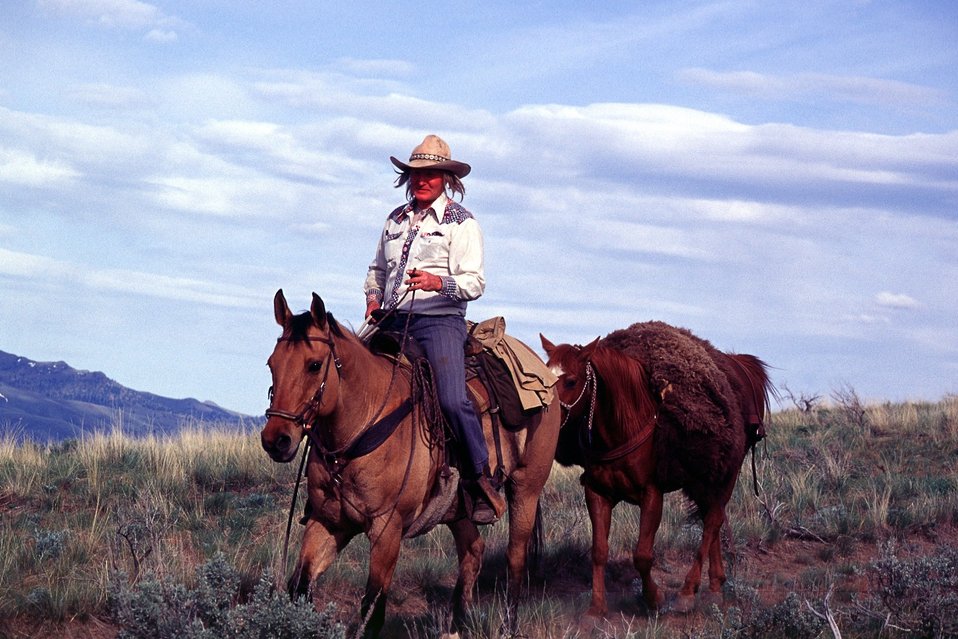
NHOTIC 10th Anniversary. Pioneer on horseback, from wagon train reenactment.